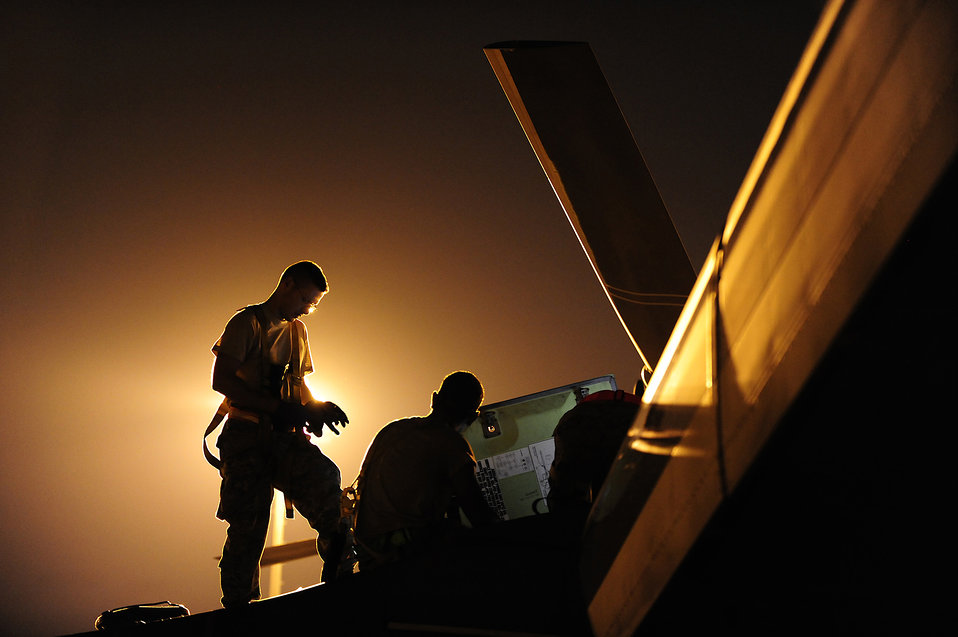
Keep the force flying

Maintainers conduct repairs on a CV-22 Osprey June 14, 2011, at Hurlburt Field, Fla.